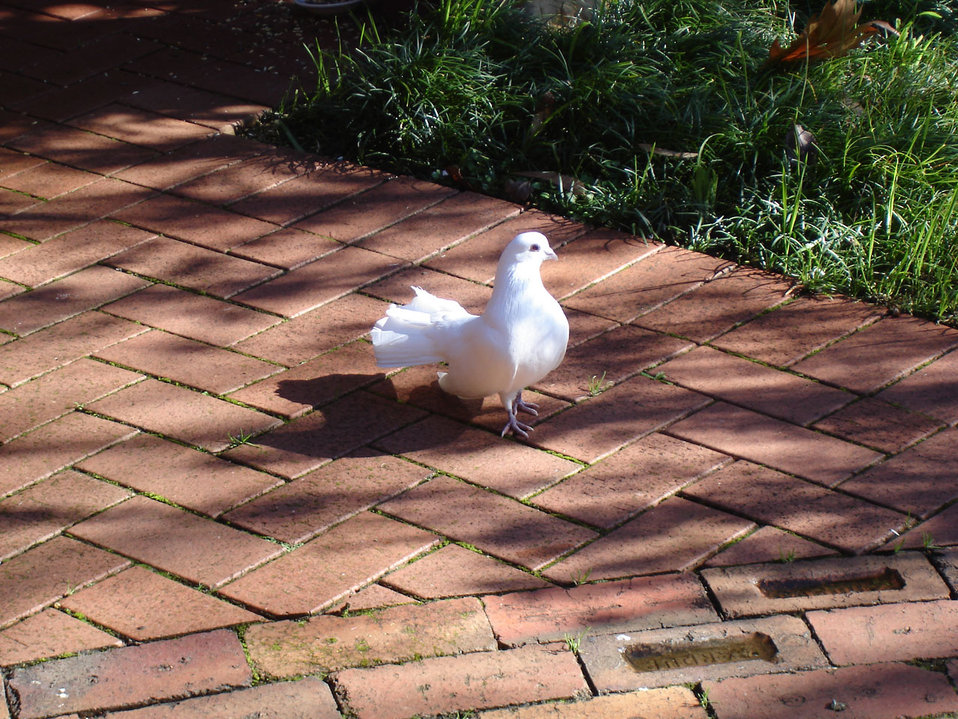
Fantail pigeon

White fantail pigeon.